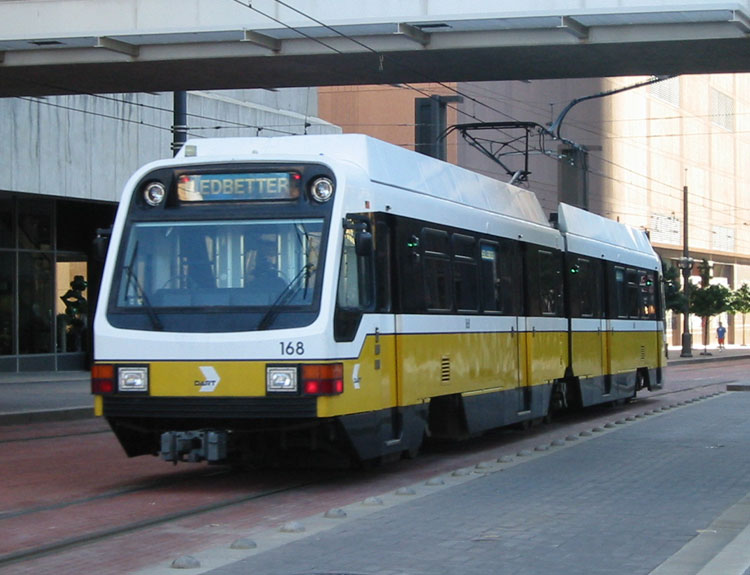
DART rail